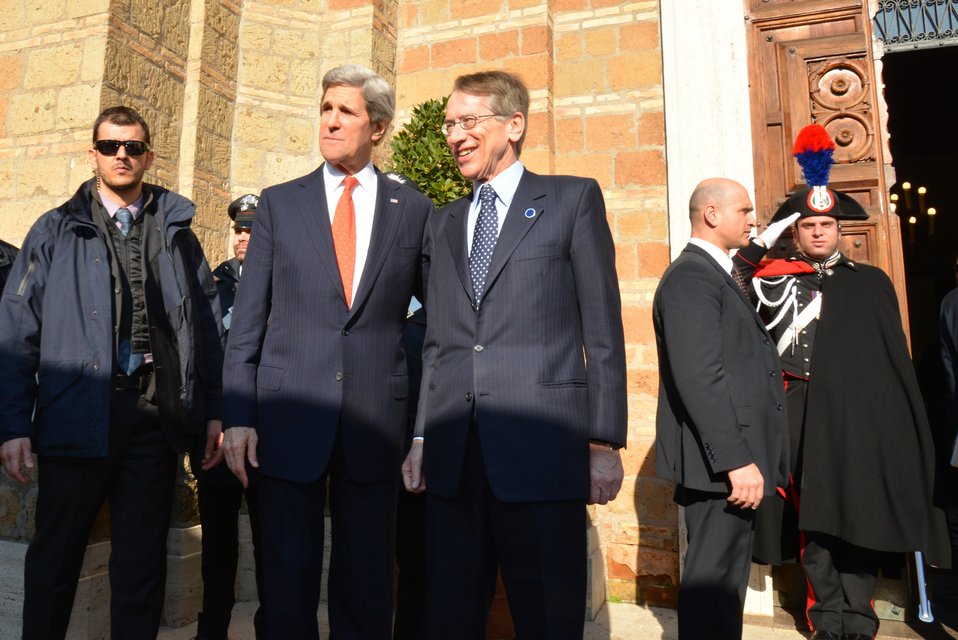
Secretary Kerry Is Greeted By Italian Foreign Minister Terzi

U.S. Secretary of State John Kerry is greeted by Italian Foreign Minister Giulio Terzi upon arriving for an Ad Hoc Meeting on Syria in Rome, Italy, on February 28, 2013.